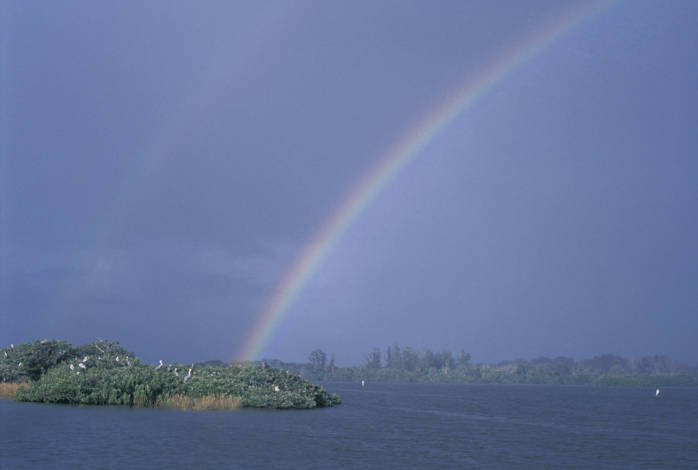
Pelican Island National Wildlife Refuge, FL

The first national wildlife refuge, established by Theodore Roosevelt in 1903